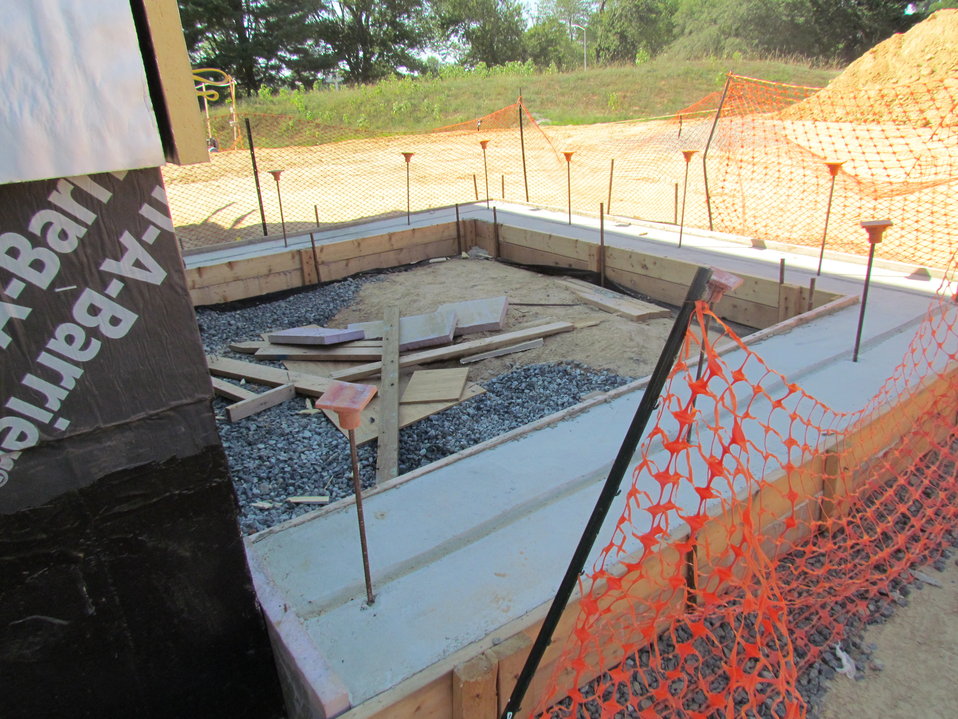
Net-Zero Energy Residential Test Facility - Photo showing completed footing for porch on rear of facility.